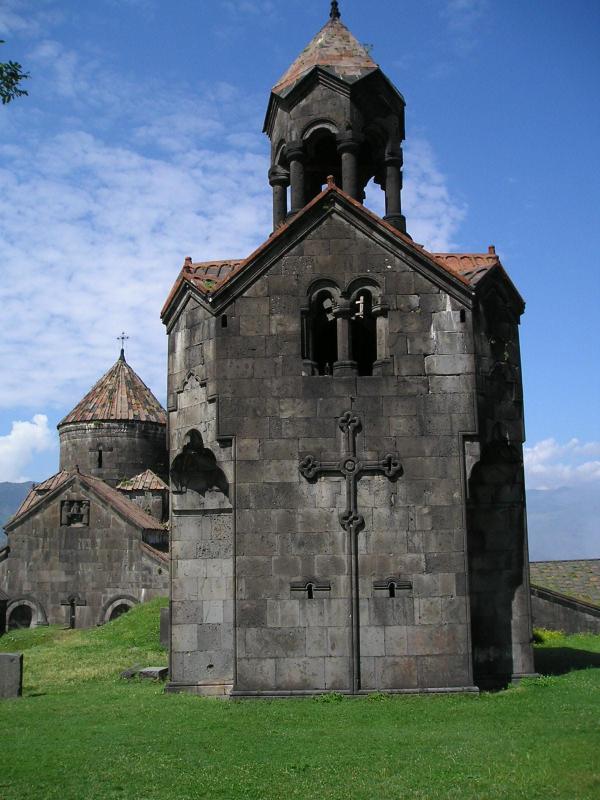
Haghpat-zvonik